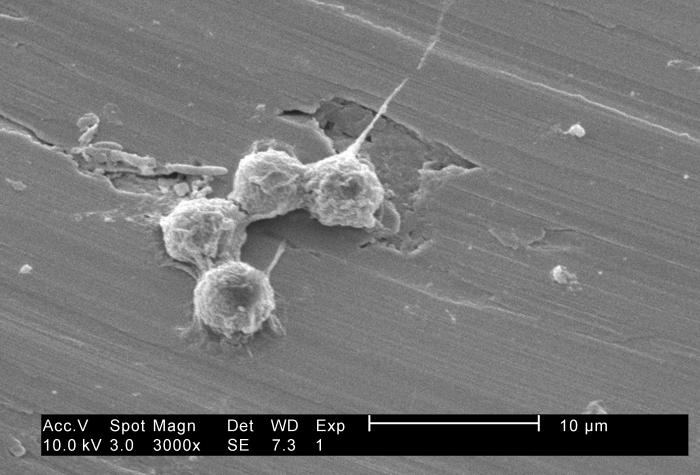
Under a moderately-high magnification of 3000X, this 2002 scanning electron micrograph (SEM) revealed some of the ultrastructural morphology exhibited by four Hartmannella vermiformis amoebae cysts.